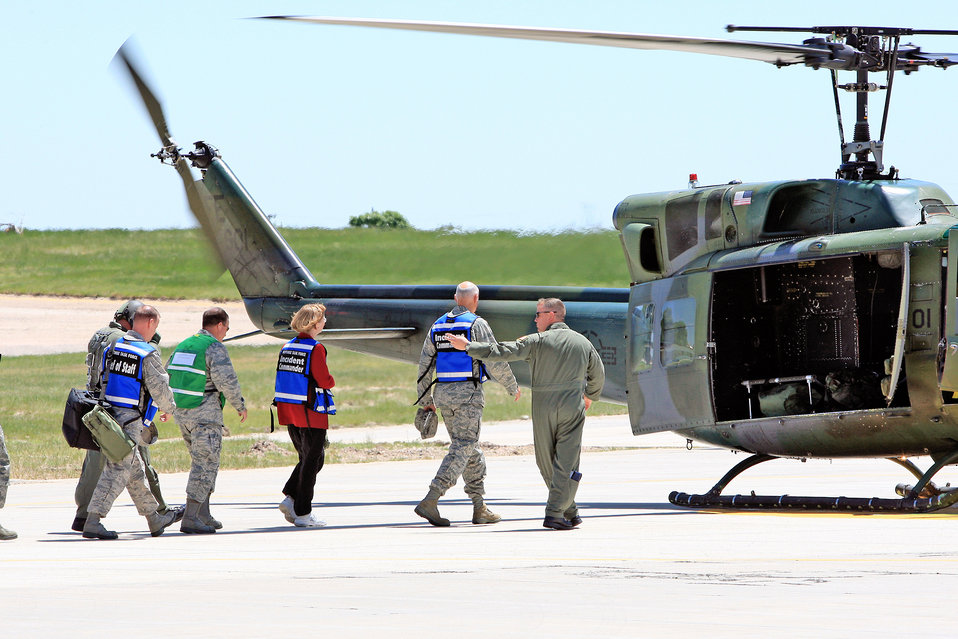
F.E. Warren officials host national-level exercise

Members of the response task force prepare to board a helicopter to take them to the scene of the incident during a Nuclear Weapon Accident/Incident Exercise 2009 scenario June 22 at F.E. Warren Air Force Base, Wyo. The continuous 72-hour exercise tested the military's ability to coordinate, cooperate and communicate with other interagency departments and federal, state and local emergency services.